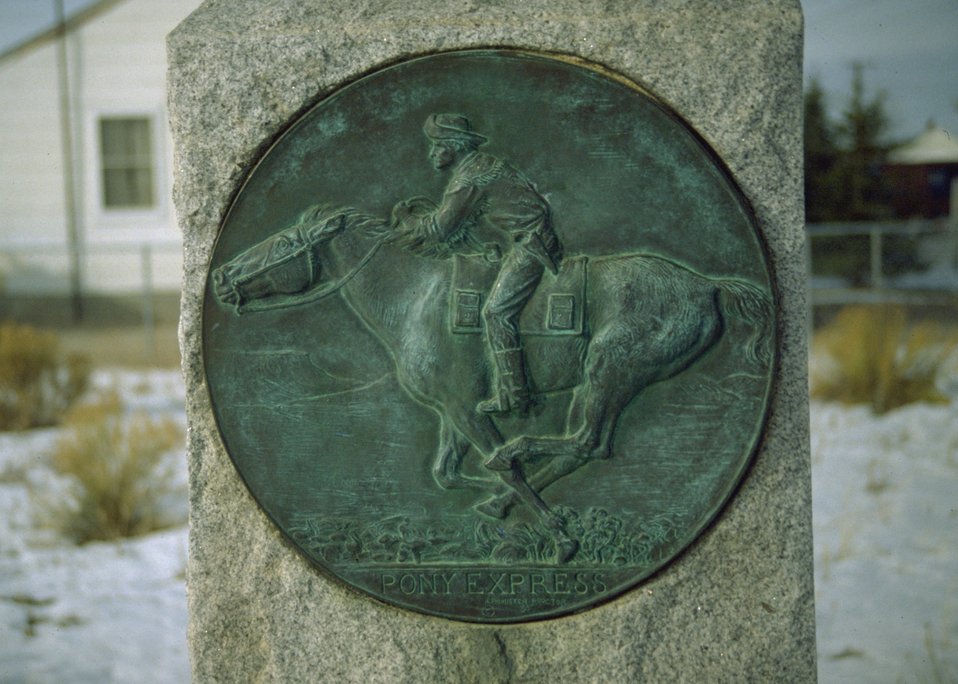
Circular horserider marker.